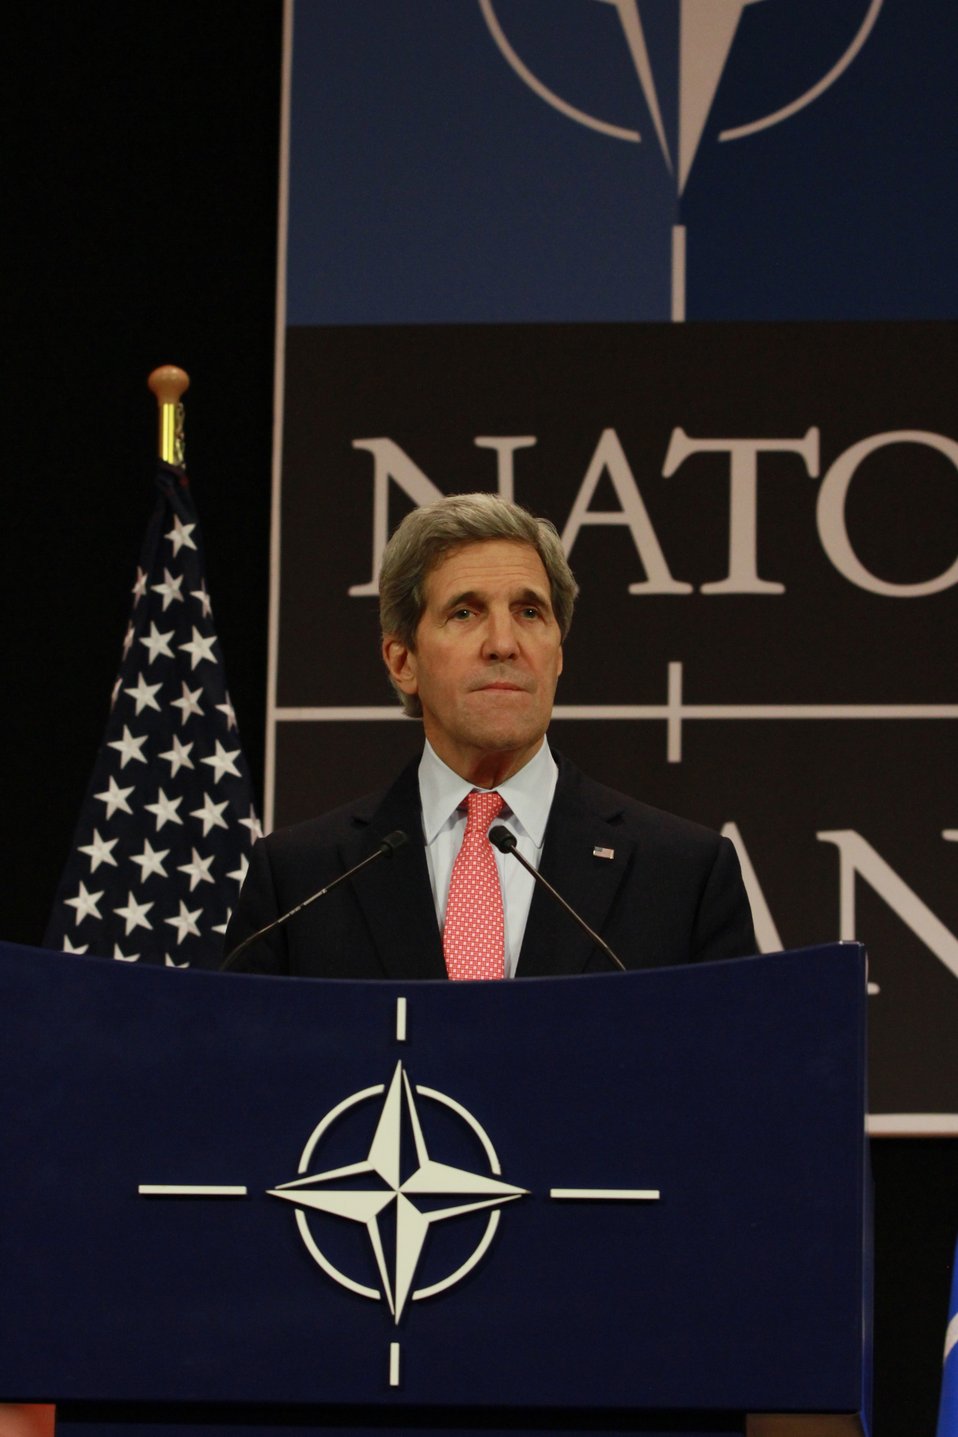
Secretary Kerry Takes Question From a Journalist at the NATO Foreign Ministerial

U.S. Secretary of State John Kerry takes a question from a journalist at the NATO Foreign Ministerial in Brussels, Belgium, on April 23, 2013.